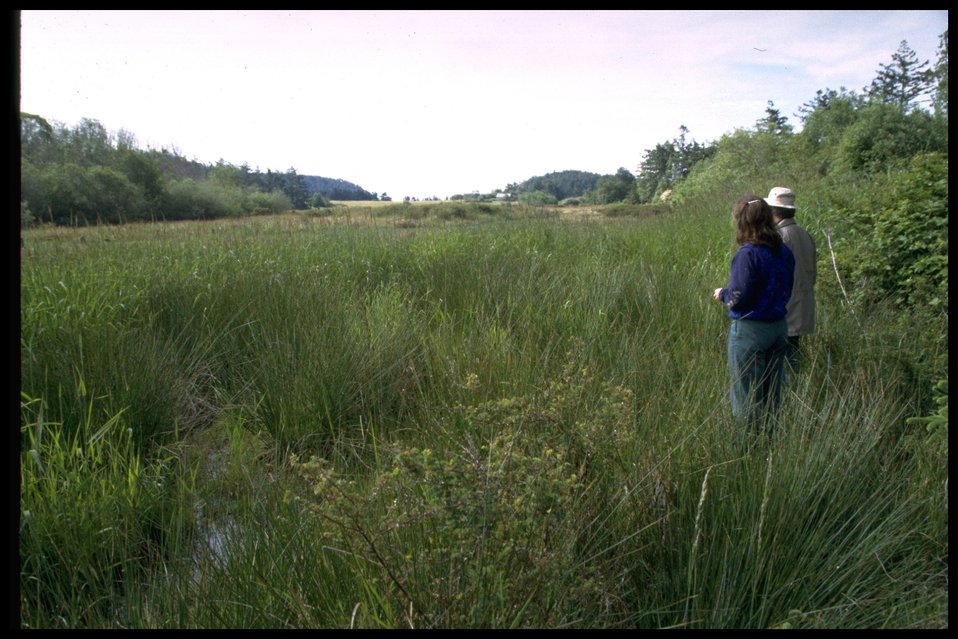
Jim Fisher and Diane Preibe at Chadwick Hill Marsh.